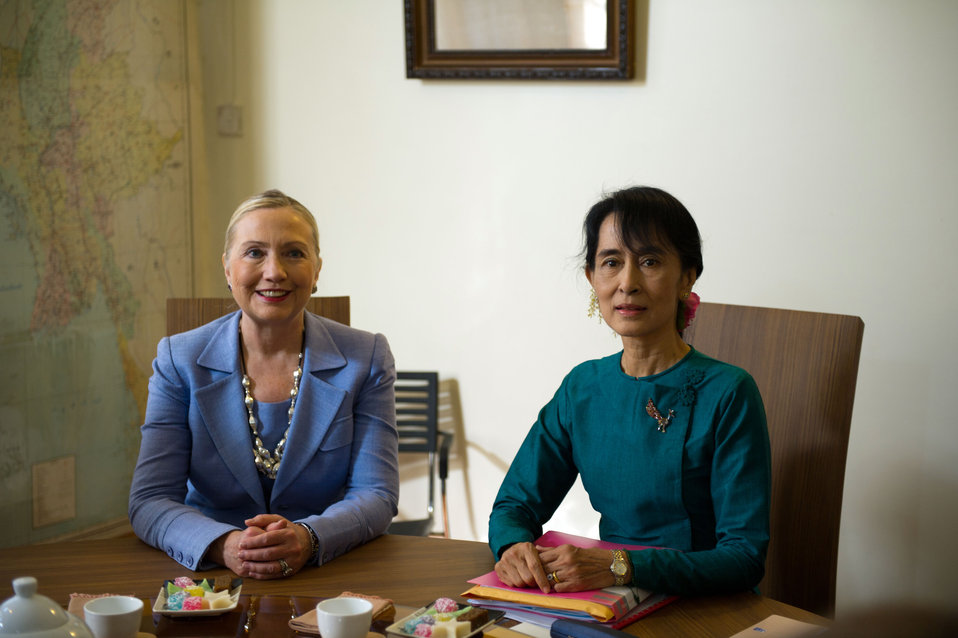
Secretary Clinton Meets With Daw Aung San Suu Kyi

U.S. Secretary of State Hillary Rodham Clinton visits Daw Aung San Suu Kyi at her house in Rangoon, Burma, on December 2, 2011.